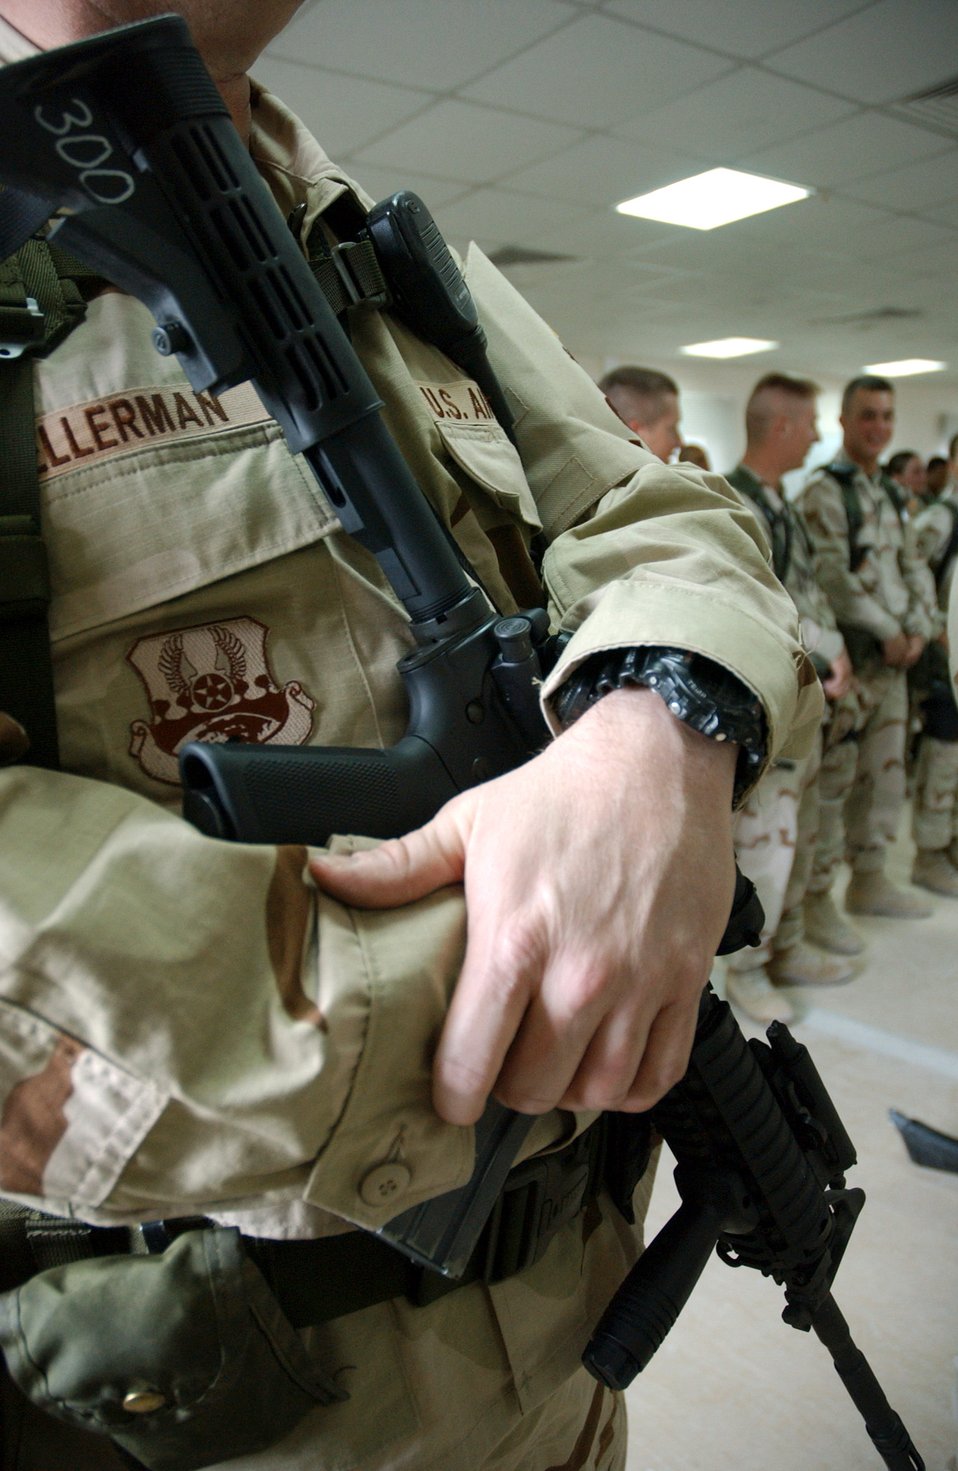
Guard mount

SOUTHWEST ASIA (AFPN) -- Staff Sgt. Charles Kellerman stands at ease during a guard mount call at a deployed location Feb. 19. Sergeant Kellerman is with the 379th Expeditionary Security Forces Squadron and is deployed from Little Rock Air Force Base, Ark.